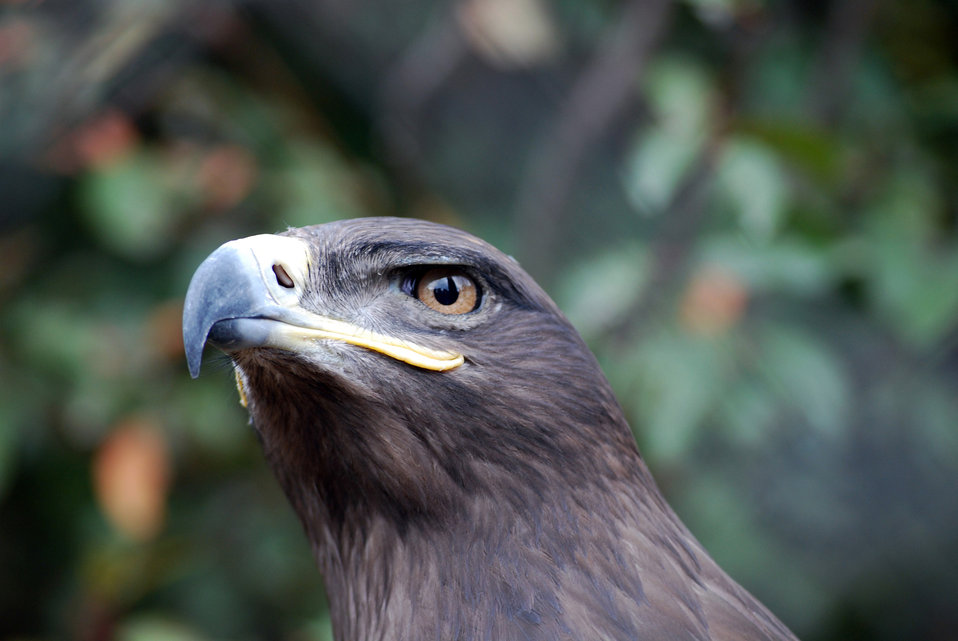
Steppe eagle watching

Head of a steppe eagle.